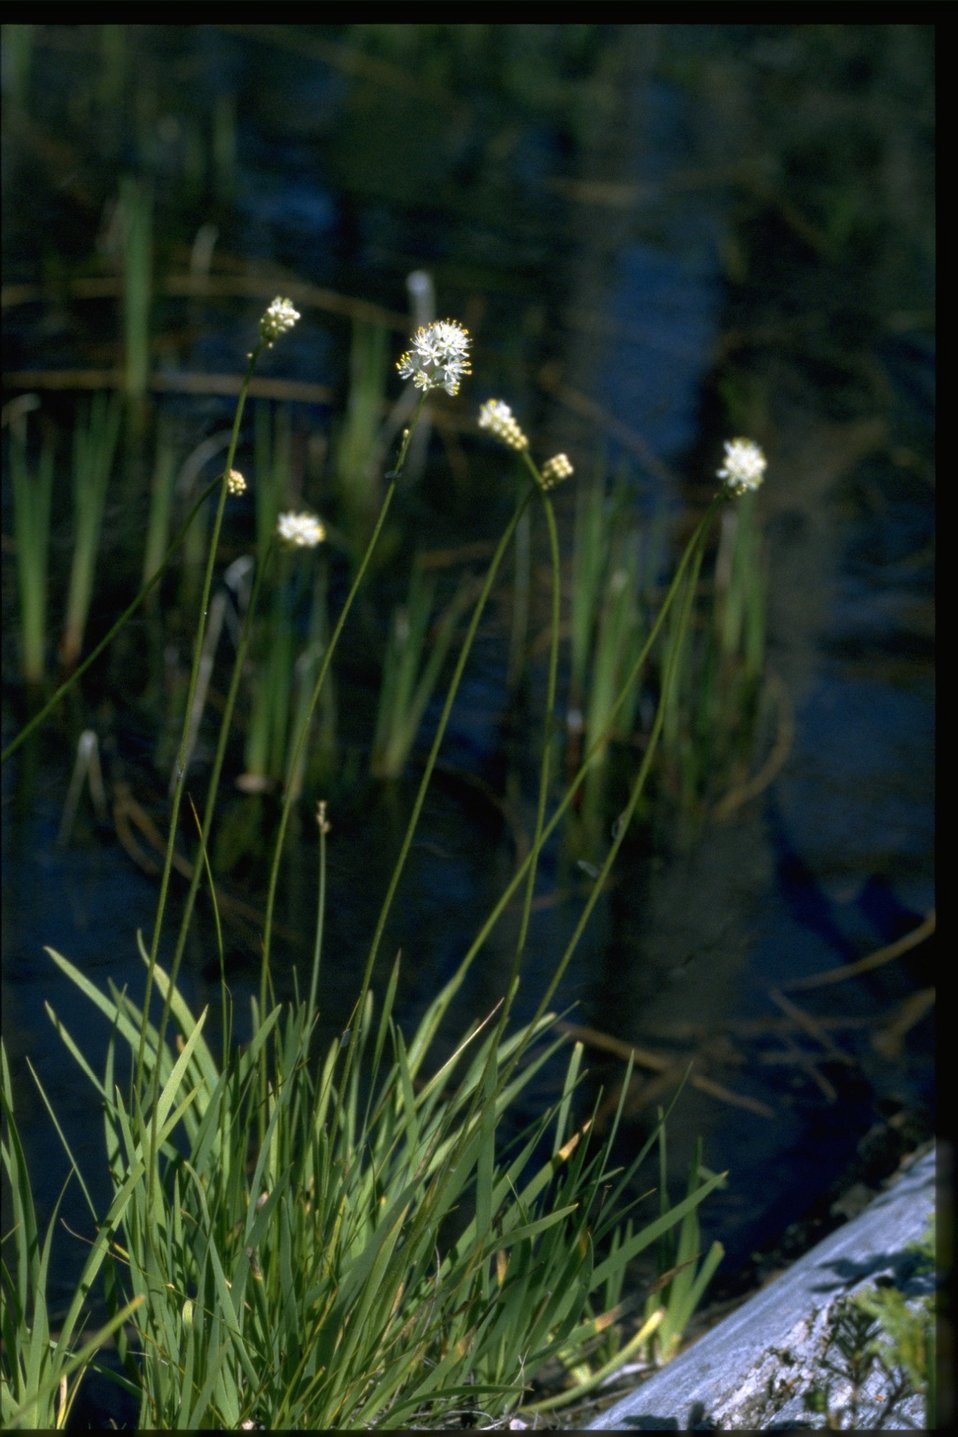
Medium shot of Tofieldia occidentalis.